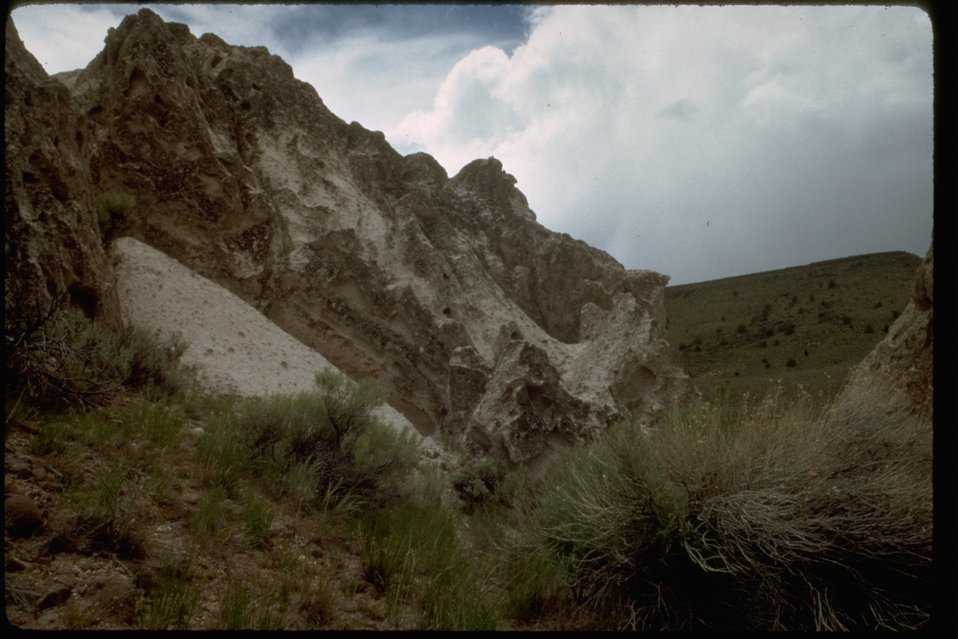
The Tuffaccous Cliffs in the Guano Creek Wilderness Study Area. WSA OR 1-132